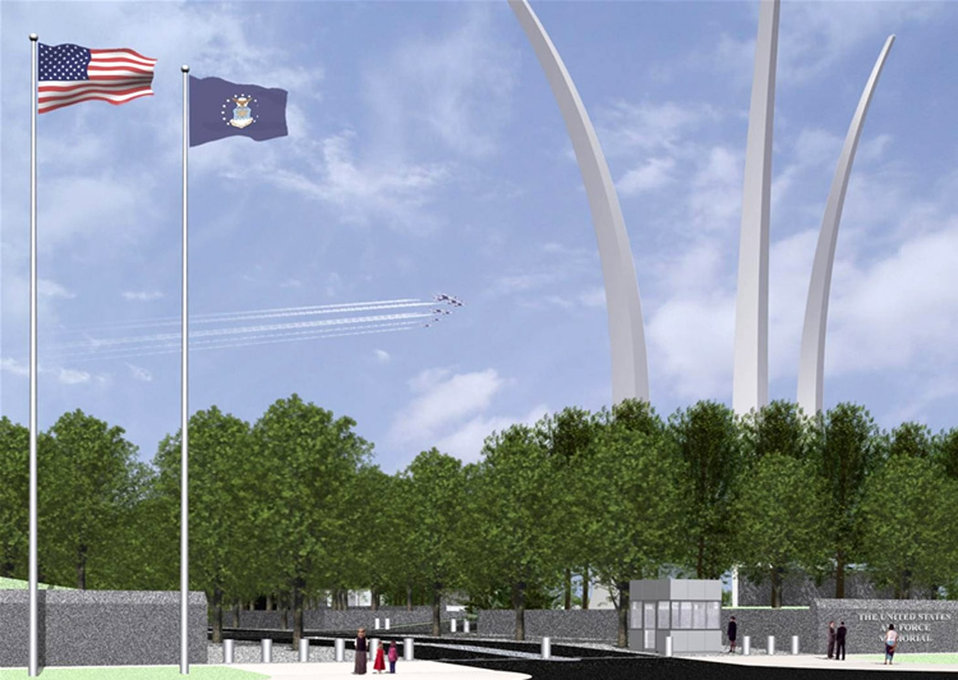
Memorial dedication to launch AF's 60th Anniversary observance

An artists conception of the new Air Force Memorial.